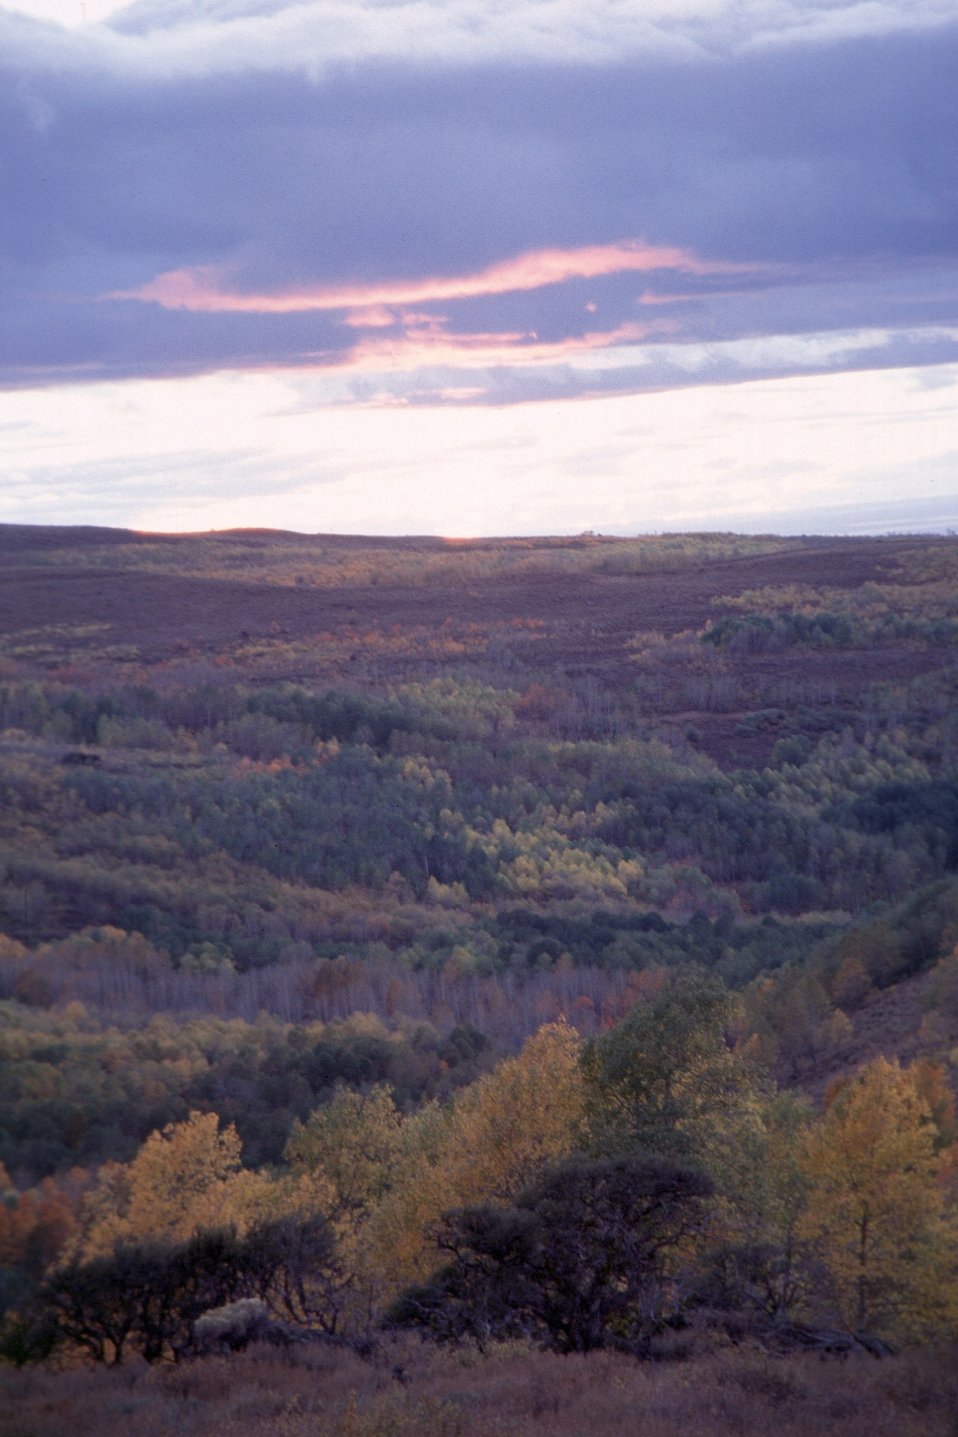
Sunset over Fish Creek, Steen's Mountain.